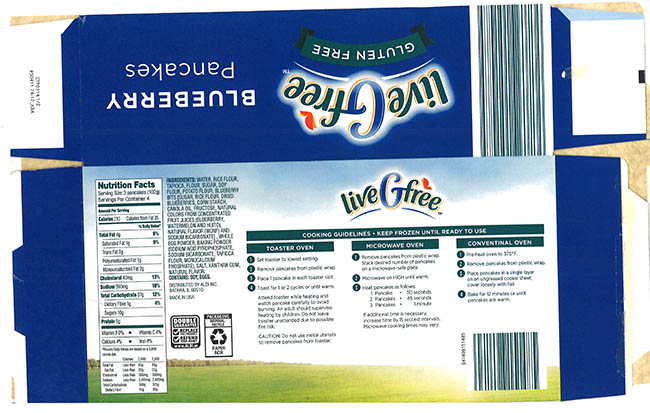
RECALLED – Pancakes

May 15, 2014 – Product Recall – Allergy Alert on Undeclared Milk in Pancakes.